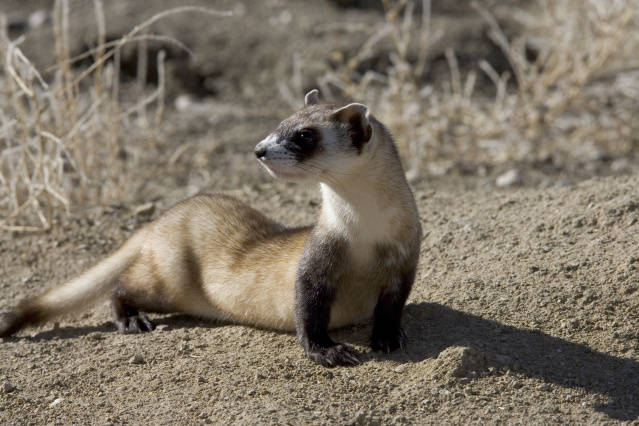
black-footed ferret